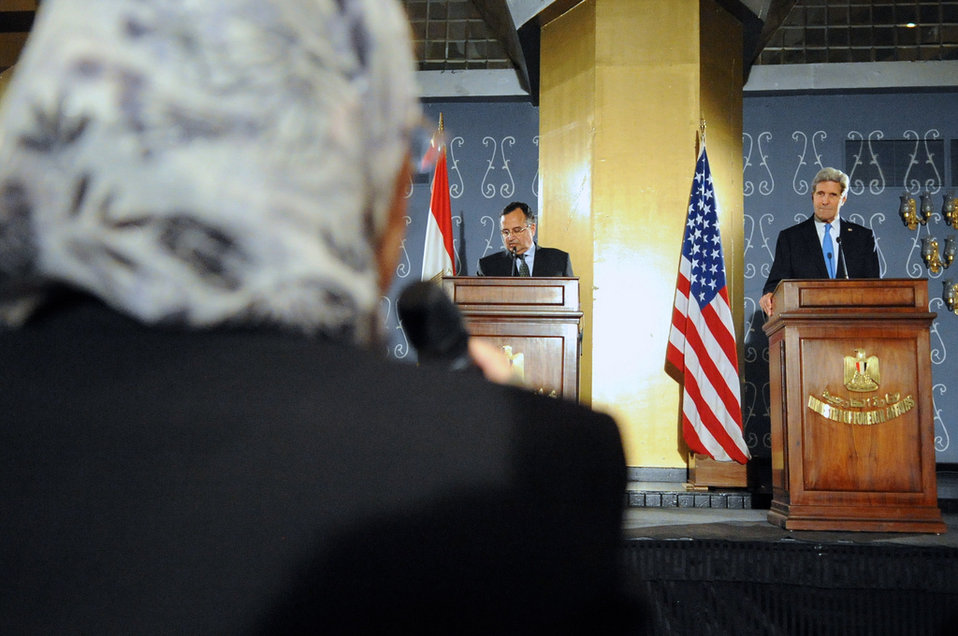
An Egyptian Journalist Questions Secretary Kerry in Cairo

U.S. Secretary of State John Kerry listens as an Egyptian journalist questions him and Egyptian Foreign Minister Nabil Fahmy during a joint news conference following a meeting in Cairo, Egypt, on November 3, 2013.